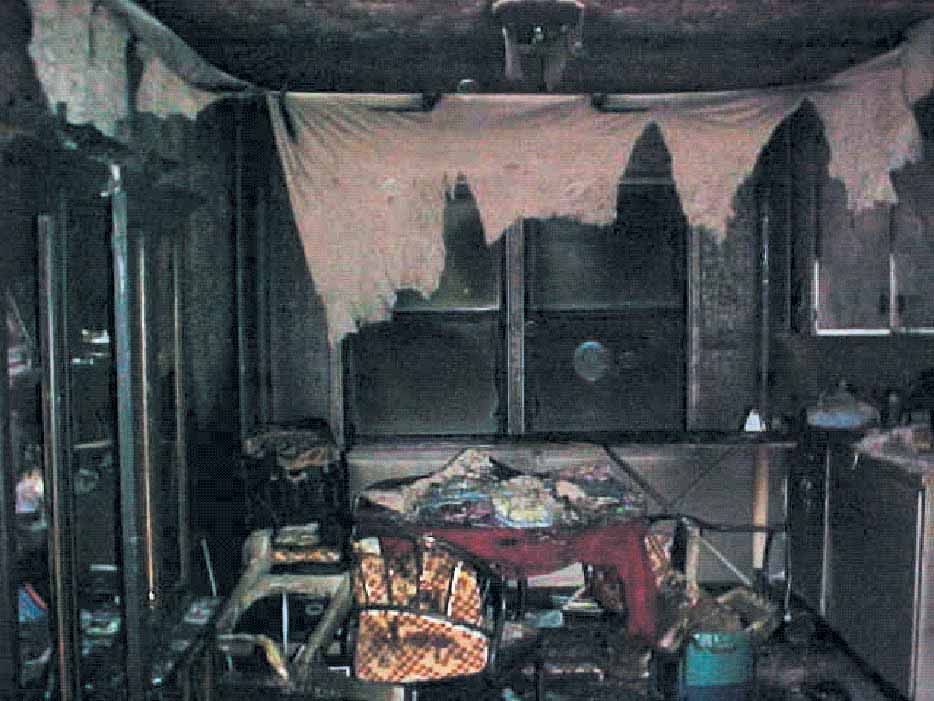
Fighting fires with generosity

ELMENDORF AIR FORCE BASE, Alaska -- Airman 1st Class Cynthia Vazquez's base housing unit here was destroyed by a fire. Airmen here donated money, clothing, food and household goods to Airman Vazquez and her family. She is an information manager with the 3rd Aircraft Maintenance Squadron.